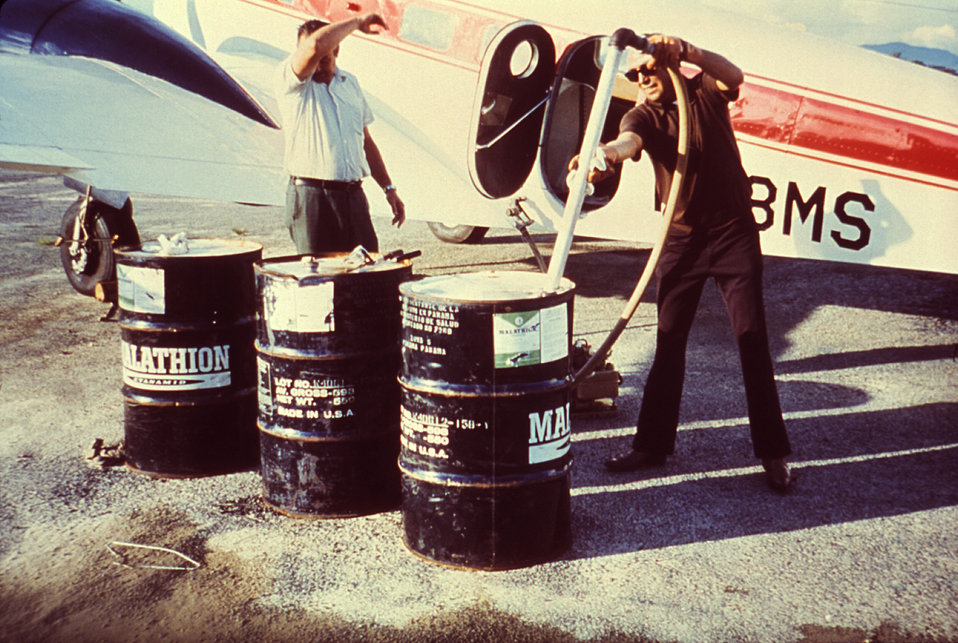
This 1981 photograph depicts two field technicians filling the pump mechanism onboard a twin-engine Beechcraft used in the dispersal of ultra-low volume (ULV) insecticidal fog in order to control populations of potential insect disease vectors.